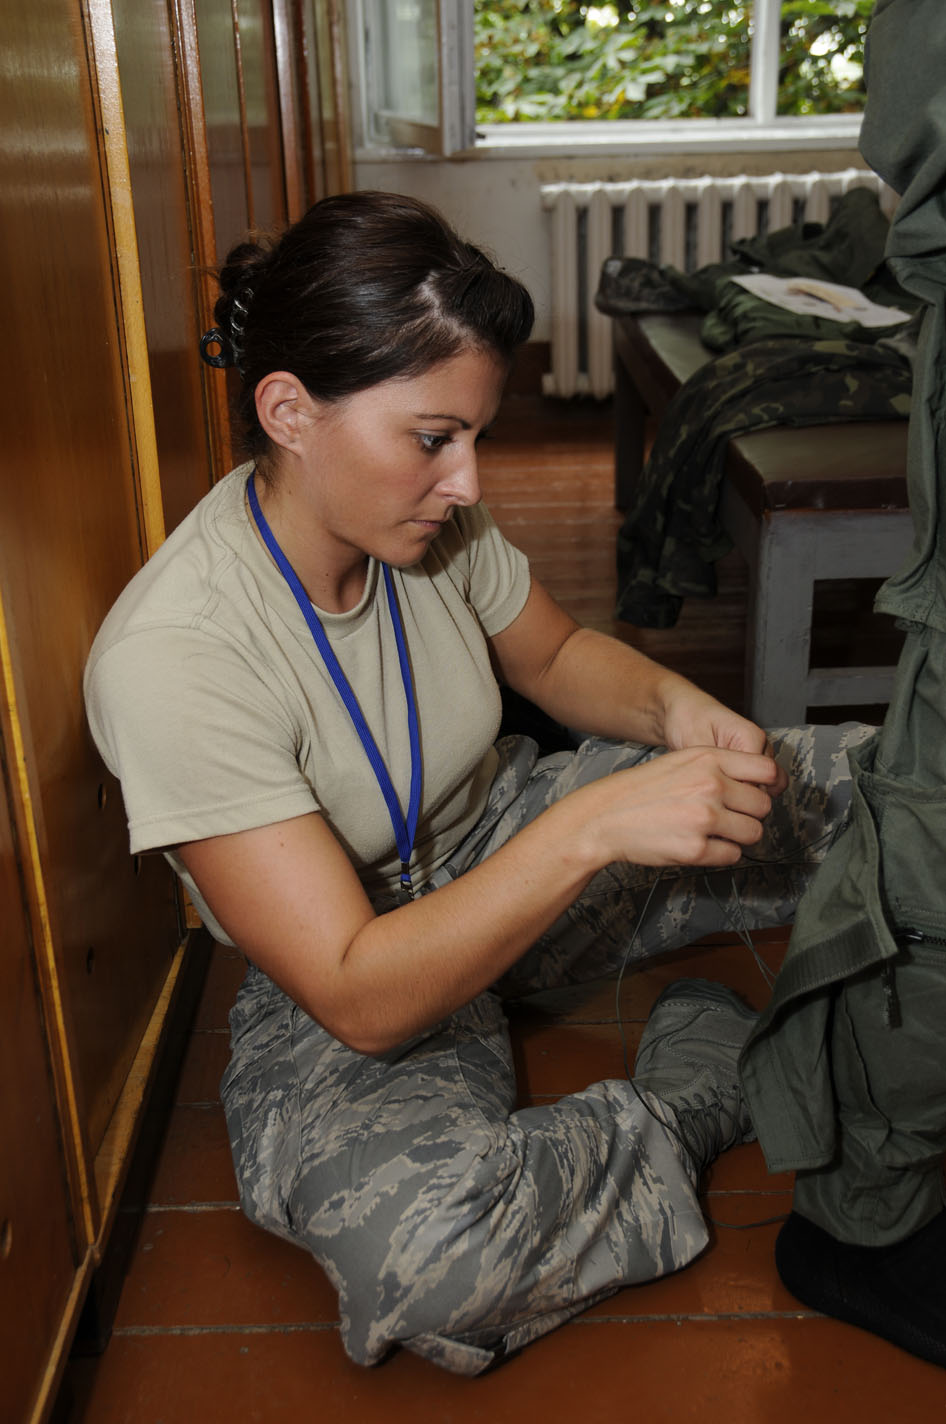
Life Supporting SAFE SKIES 2011

Tech. Sgt. Kamee Wilson alters a flight suit for a Ukrainian pilot, who is participating in SAFE SKIES 2011 July 22, 2011, at Mirgorod Air Base, Ukraine. The Air National Guard is in Ukraine supporting SAFE SKIES 2011, a two-week multinational flying event preparing Ukraine and Poland to better protect their airspace. Wilson is a life support technician from the Alabama Air National Guard.